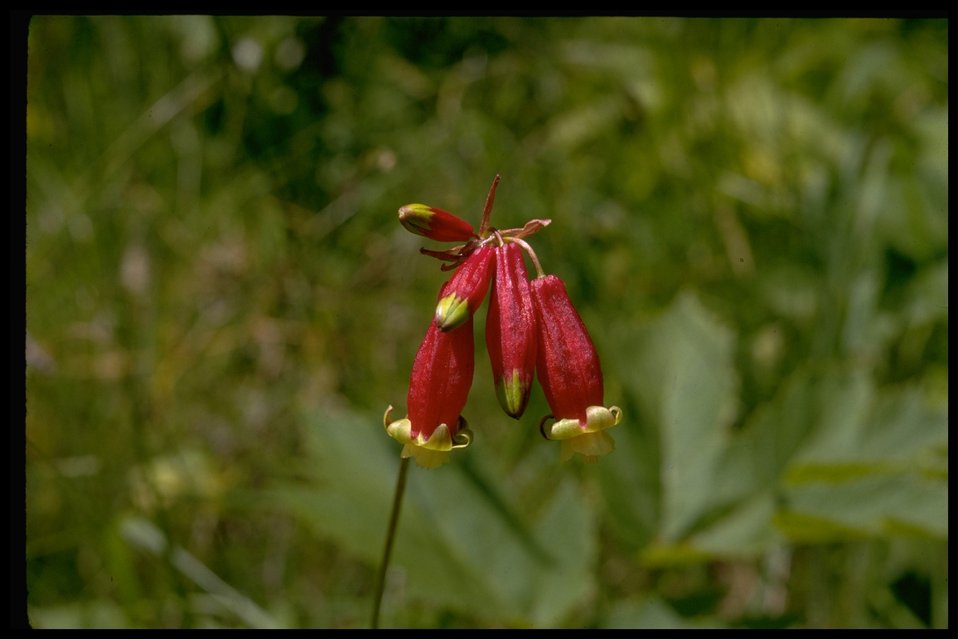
Medium shot of fire cracker plant (Dichelostemma ida-maia).